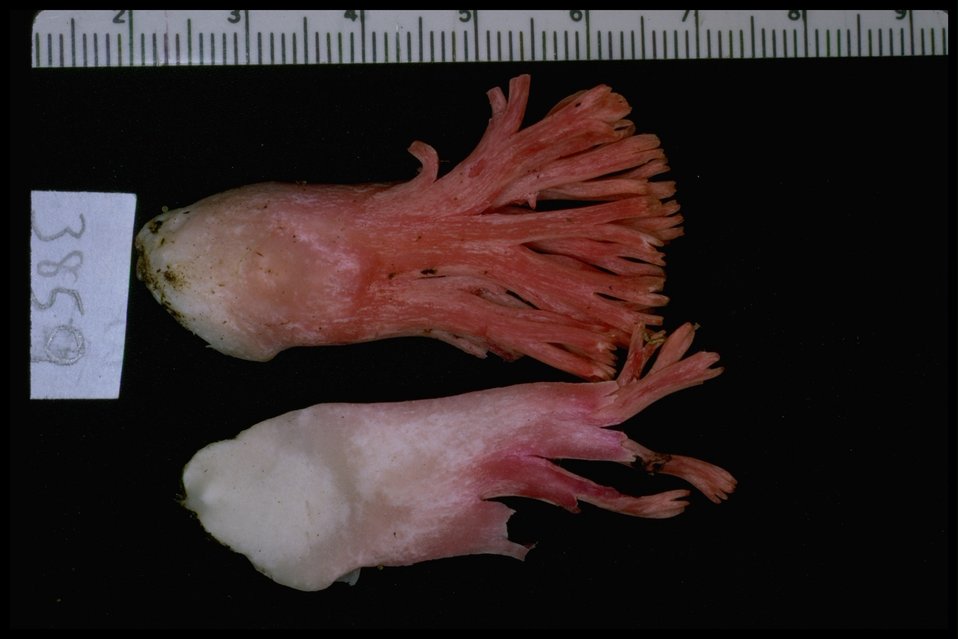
Ramaria stuntzii, commonly known as the Coral Mushroom.